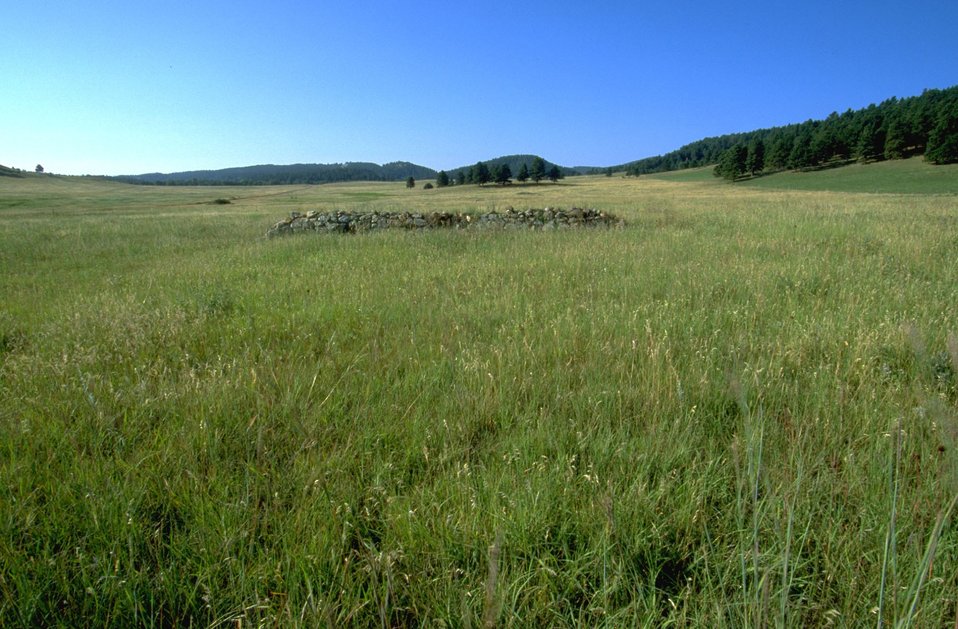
Cavalry Jumps from a distance at the south end of Fort Meade